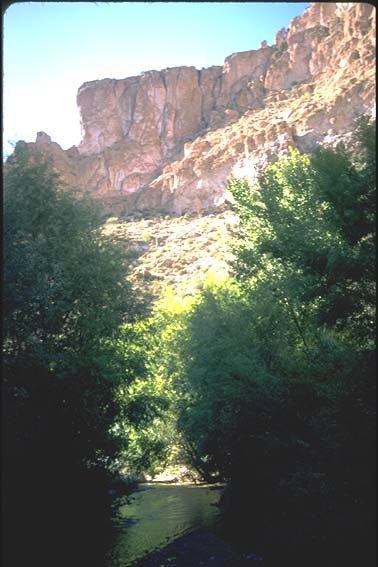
Aravaipa Canyon Wilderness